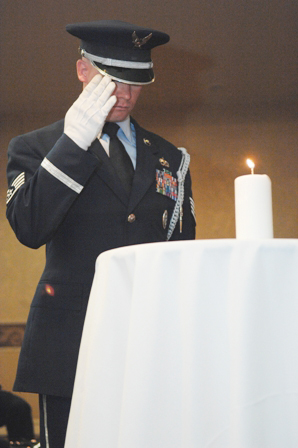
Lonely Eagles ceremony recognizes fallen Tuskegee Airmen

Staff Sgt. Chadd Wheeler salutes a candle during the Lonely Eagles Ceremony at the 38th Annual Tuskegee Airman, Inc. convention Aug. 7 in Las Vegas. TAI is a non-profit organization dedicated to honoring the accomplishments of the African-American air, ground and operations crew members in the Army Air Corps during World War II. Sergeant Wheeler is a 820th RED HORSE Squadron member from Nellis Air Force Base, Nev.